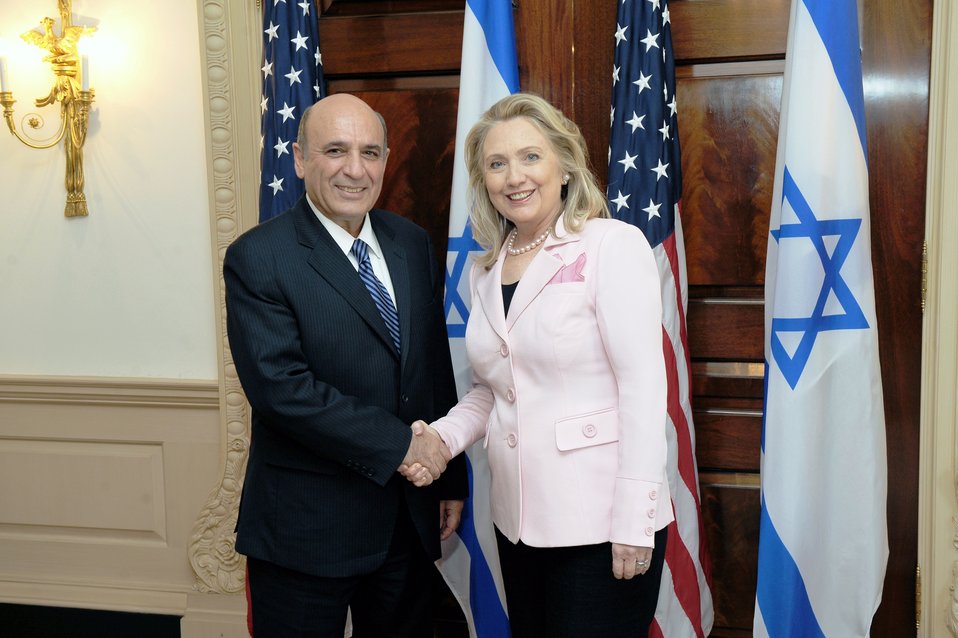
Secretary Clinton Meets With Israeli Deputy Prime Minister Mofaz

U.S. Secretary of State Hillary Rodham Clinton meets with Israeli Deputy Prime Minister Shaul Mofaz at the U.S. Department of State in Washington, D.C., on June 20, 2012.